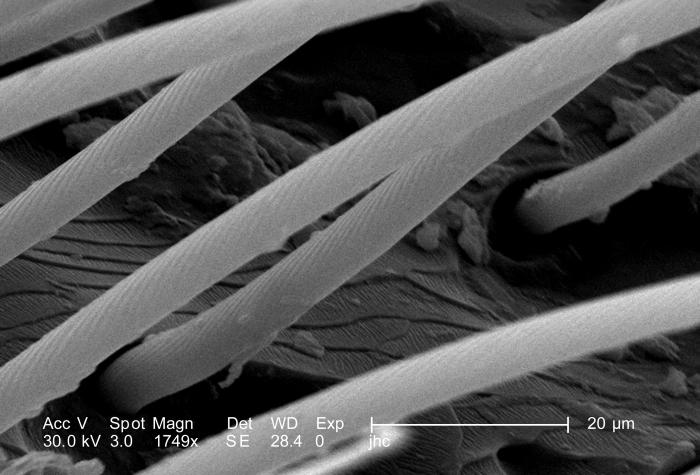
Under a high magnification of 1749X, 4X that of 10117, this scanning electron micrograph (SEM) depicted some of the morphologic details found on the exoskeletal surface of an unidentified hornet discovered in the suburbs of Decatur, Georgia. In this particular view, we see a close-up of the numerous sensorial 'hairs', or 'setae', which adorn almost the entire exterior, providing the hornet with data indicative of changes encountered in its environment such as chemical, thermal, and tactile queues. These setae are composed of chitin, unlike mammalian hair, which is composed of the molecule keratin. Also note the shingle-like arrangement of the hornet's exoskeletal surface from which the setae originate.